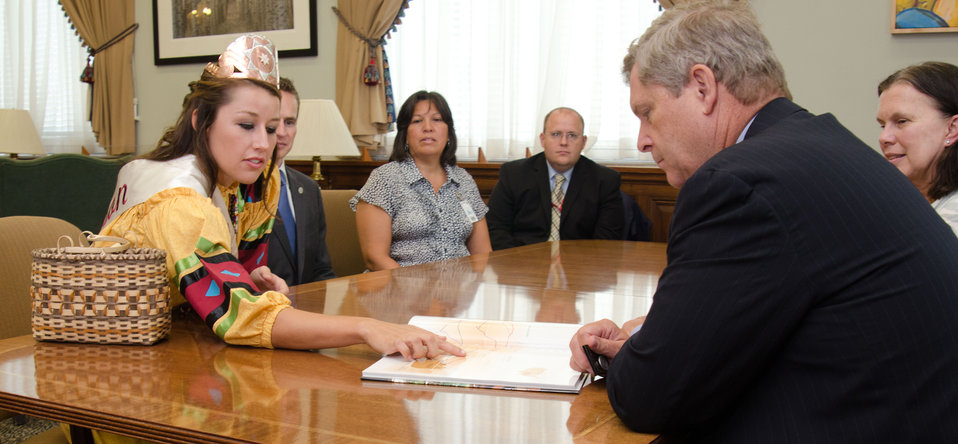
Miss Cherokee 2010-2011 Brooke Hudson (left) and officers of the Cherokee nation met with U.S. Department of Agriculture Secretary Tom Vilsack (right) in Washington, DC, on Tuesday, August 9, 2011. During the meeting Miss Hudson presented Secretary Vilsack with a book that told of the 'Trails of Tears,' the relocation that included the movement of the Cherokee Nation in 1938 from the southeastern United States to Oklahoma. Hudson had completed a cycling journey along the same route. The trip took her more then 20 days to complete. She told of how the experience was both physically and emotionally demanding.